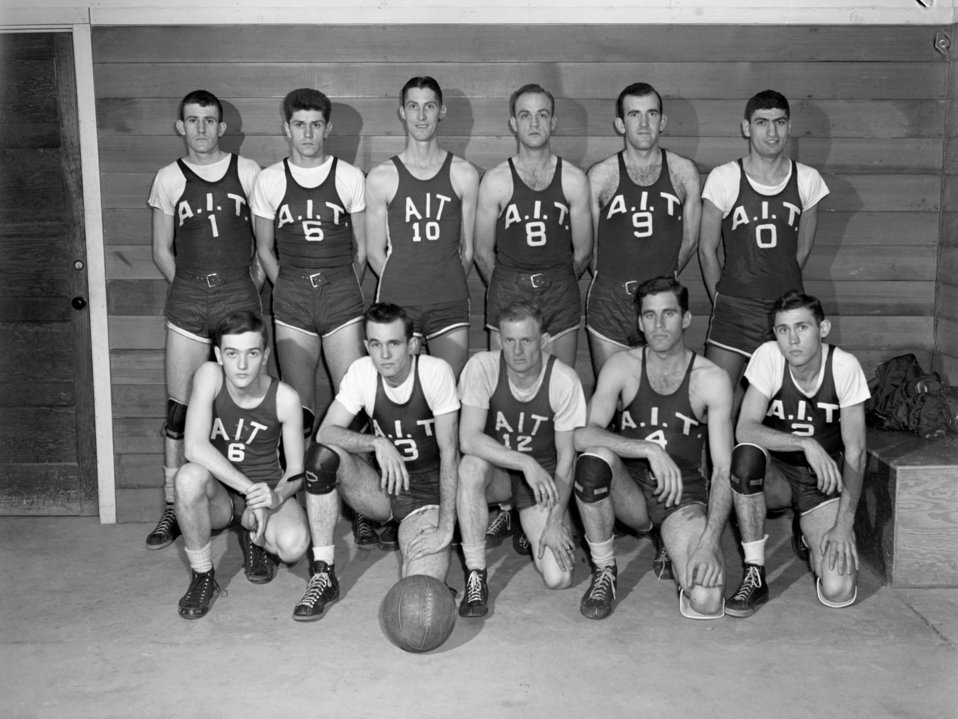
Basketball A.I.T. Oak Ridge 1947

3280-3a DOE photo Ed Westcott 1-29-1947 Oak Ridge Tennessee